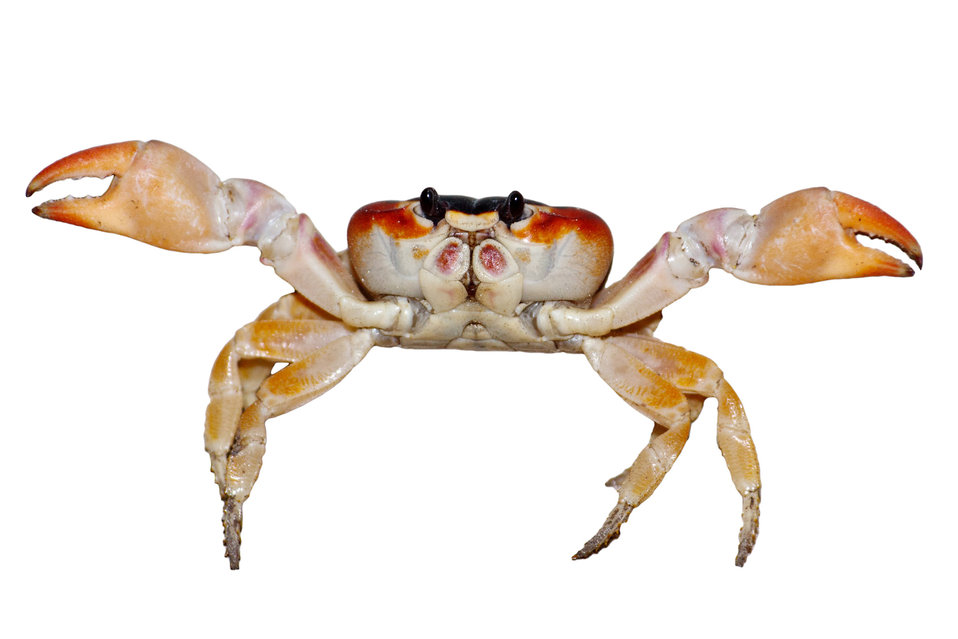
Crab isolated

Small crab isolated on white background.